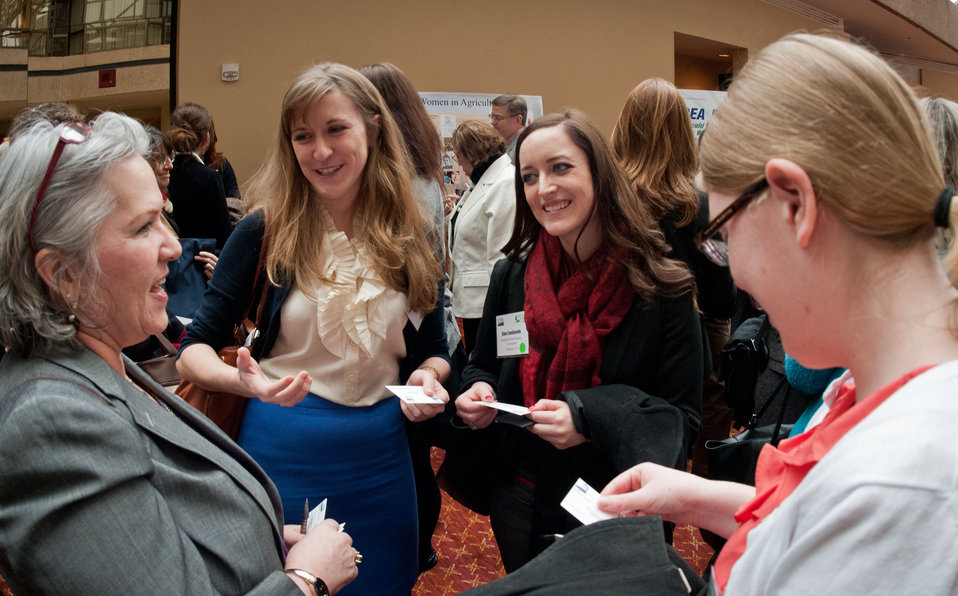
Business cards were out as soon as the first Women in Agriculture-Speed Networking Event began at the U.S. Department of Agriculture (USDA), 2013 Agricultural Outlook Forum at the Crystal Gateway Marriott Hotel in Arlington, VA on Friday, Feb. 22, 2013. The breakout session encouraged and promoted the participation of women in American agriculture.